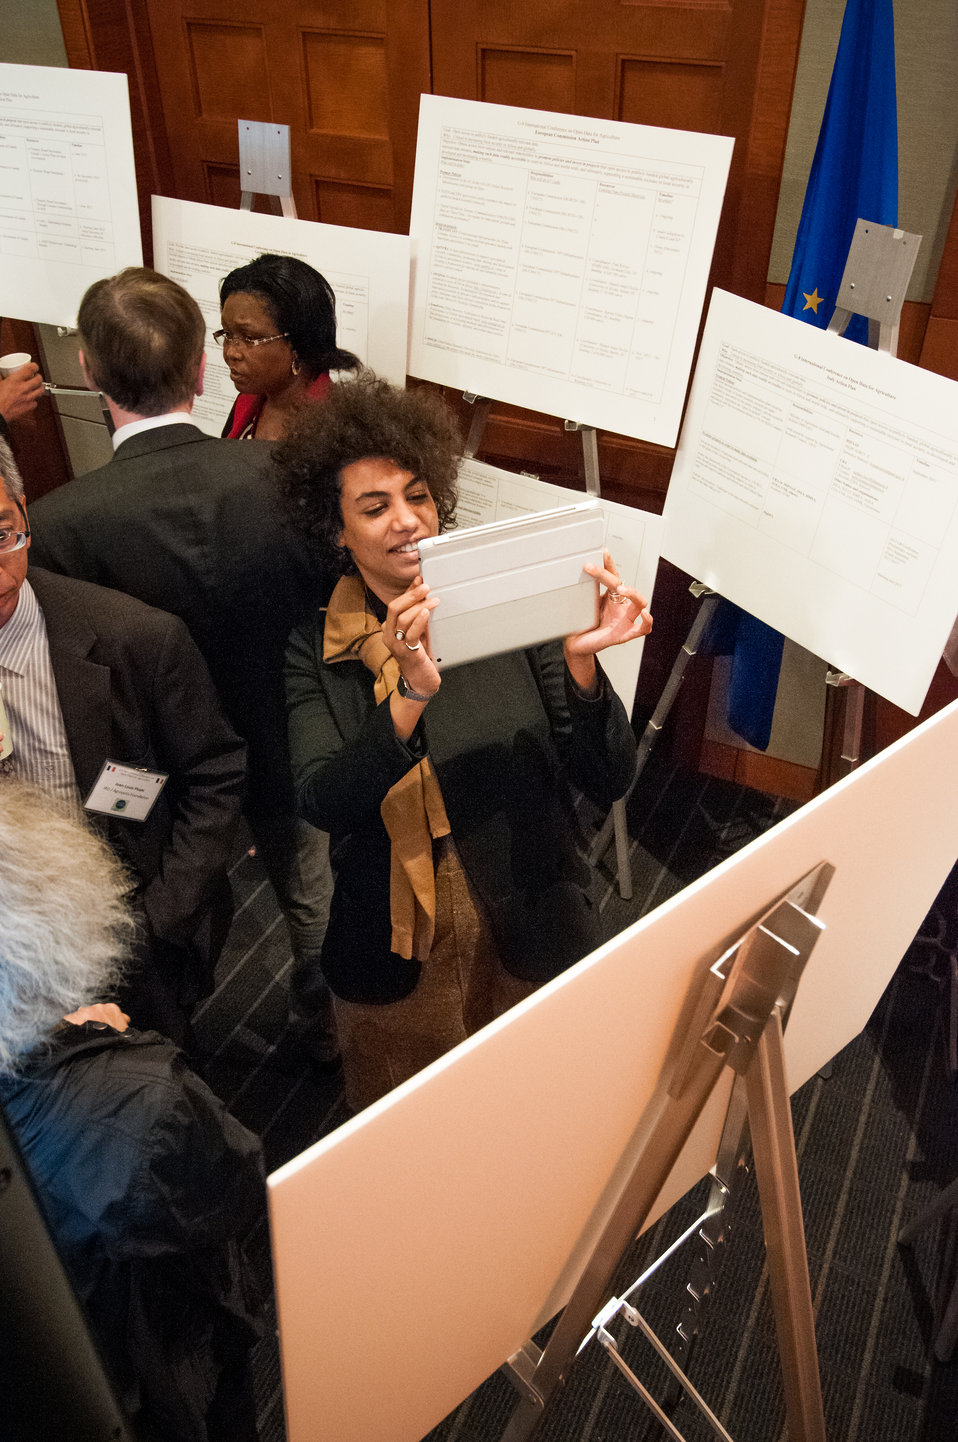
Sarah Lawan, New Partnership for Africa's Development (NEPAD) a program of the African Union captures an image of one of the action plans developed at the G-8 International Conference on Open Data for Agriculture in Washington, D.C., Tuesday, April 30, 2013. The conference launched a new 'virtual community' as part of a suite of actions, including the release of new data, that the U.S. is taking to give farmers and ranchers, scientists, policy makers and other members of the public easy access to publicly funded data to help increase food security and nutrition.